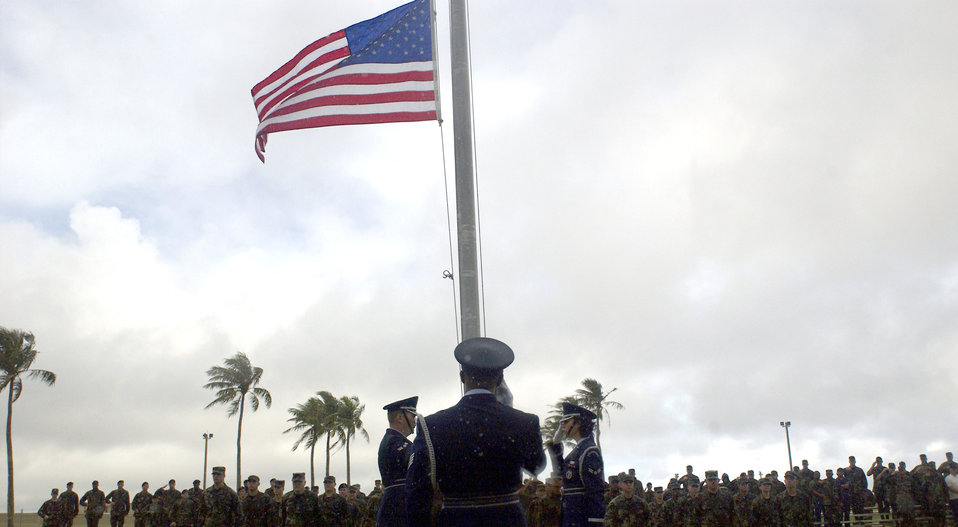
Paying tribute

ANDERSEN AIR FORCE BASE, Guam -- Staff Sgt. John Christian (foreground) salutes as Airman 1st Class Curtis Latham (left) and Kristin Ruleau members of the base Blue Knights Honor Guard, lower the flag to half-mast in honor of fallen Airmen during the 32nd anniversary of the Arch Light Memorial ceremony here Dec. 17. The base's Arc Light Memorial Park is a tribute, not only to the 33 airmen from Andersen AFB, but also to the 75 men who lost their lives flying B-52 missions during Operation Linebacker II against communist forces in Vietnam between June 18, 1965, and Aug. 15, 1973.